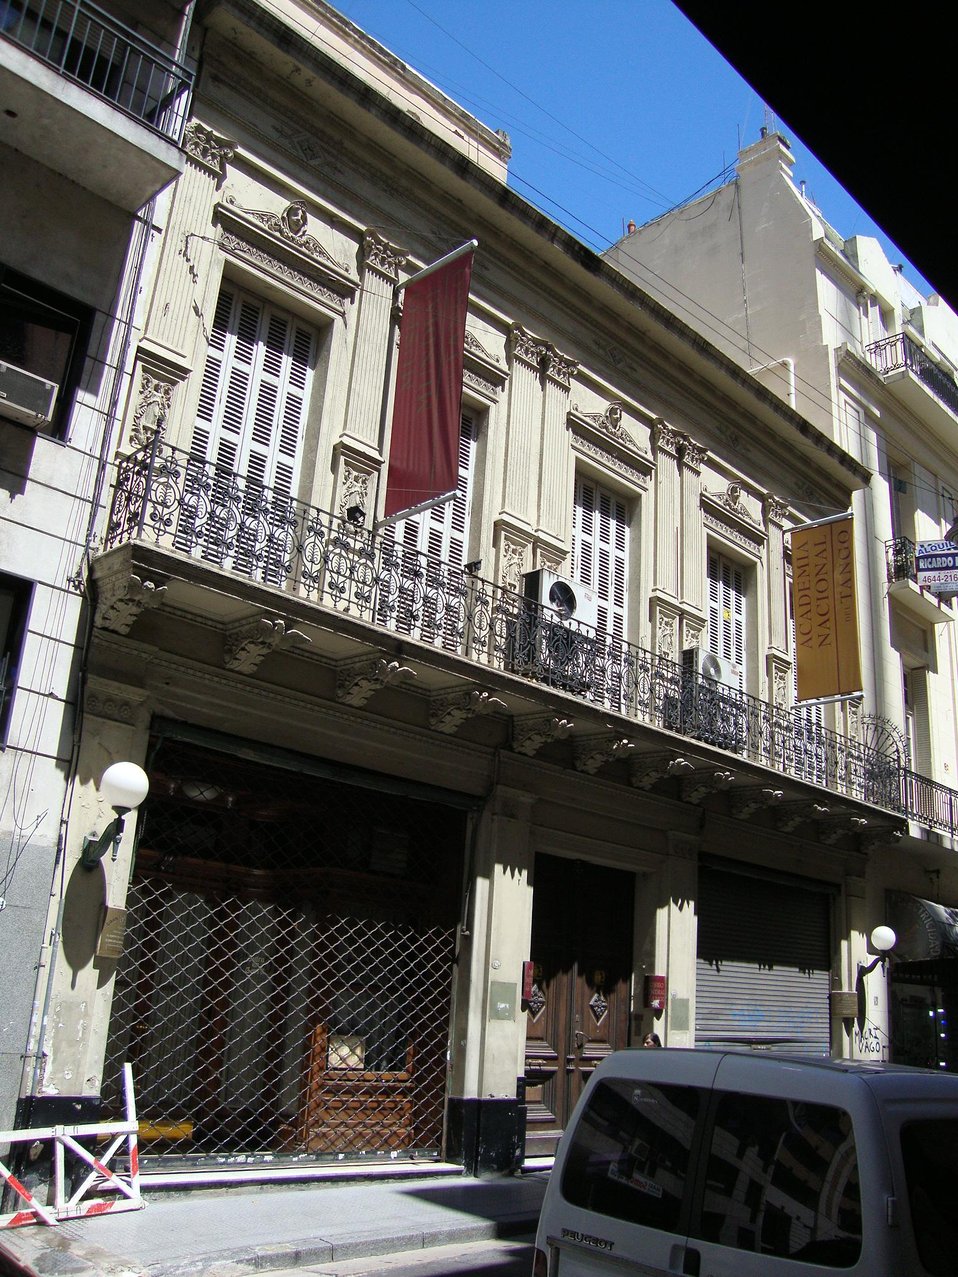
Español: Frente de la residencia de la familia Unzué en la calle Rivadavia, de la segunda mitad del siglo XIX. En la planta baja funciona el Café Tortoni desde 1880, y en la planta alta está la Academia Nacional de Tango.